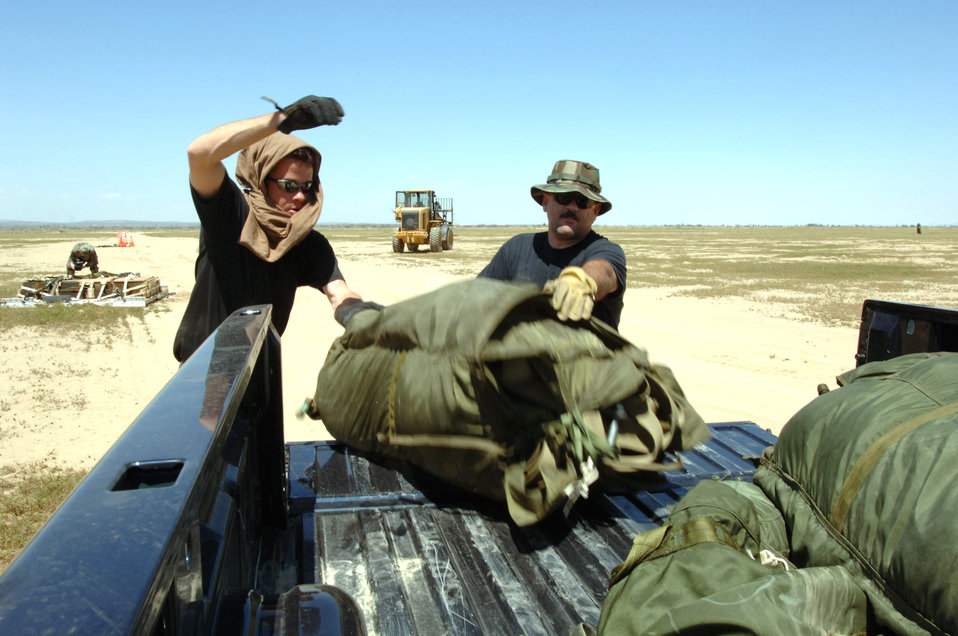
Pallet drop over California

Senior Airmen Mark Richwine and Cenobio Alvarez load a parachute used to extract a Type 5 heavy pallet that was dropped from a C-130J Hercules at Edwards Air Force Base, Calif., on Sunday, April 30, 2006. The mission was part of a test to certify the aircraft's capability to drop this type of pallet. Guard, Reserve and active-duty aircrews from Channel Islands Air National Guard Base, Calif.; Little Rock AFB, Ark.; and Keesler AFB, Miss., participated in the certification. This was the first time the